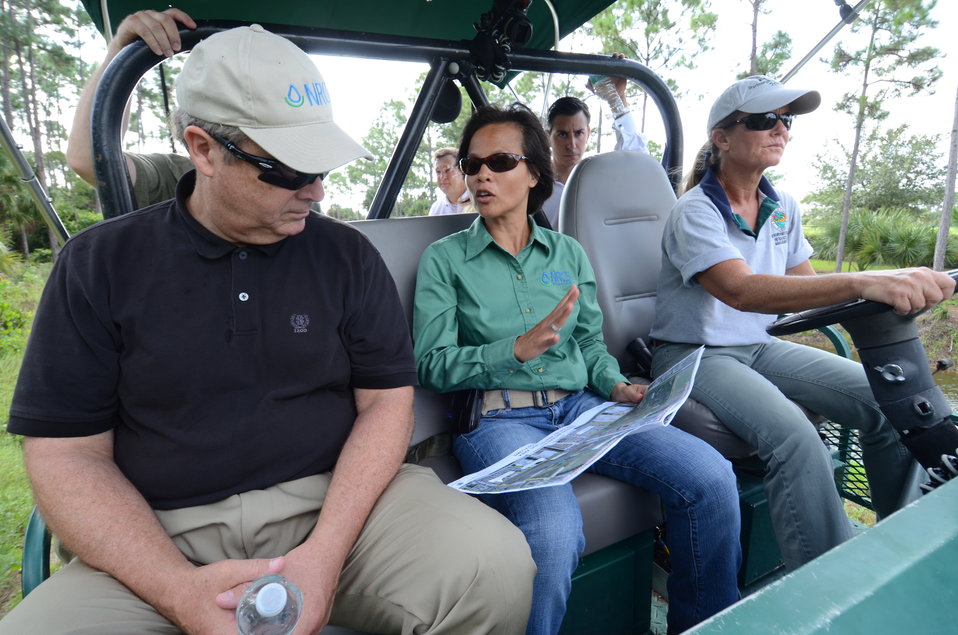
Agriculture Secretary Tom Vilsack today announced $100 million in financial assistance to acquire permanent easements from eligible landowners in four counties and assist with wetland restoration on nearly 24,000 acres of agricultural land in the Northern Everglades Watershed, FL, on Thursday, August 8, 2011.